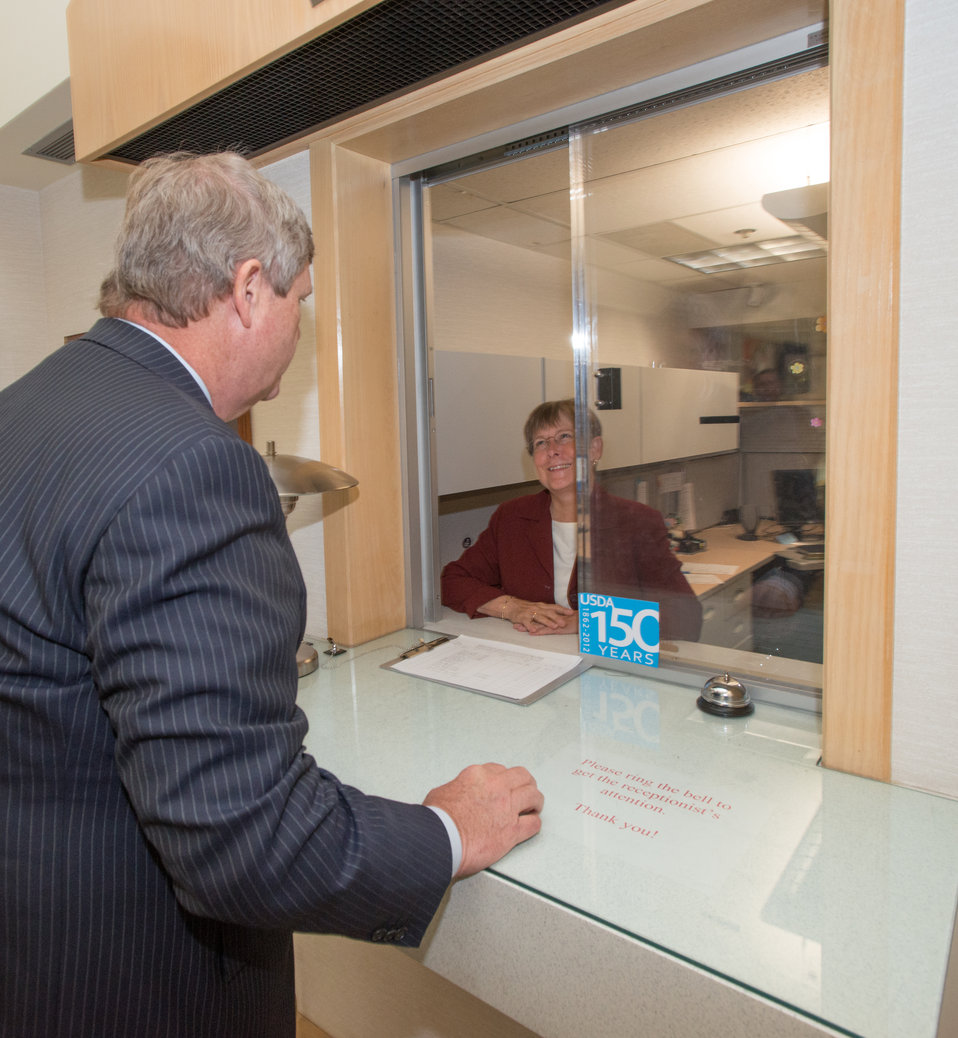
Agriculture Secretary Tom Vilsack chats with Office Automation Assistant Vickie Traxler during his visit to the Agriculture Research Service (ARS) National Center for Genetic Resources Preservation (NCGRP) in Ft. Collins, CO, on Wednesday, Nov. 6, 2013.